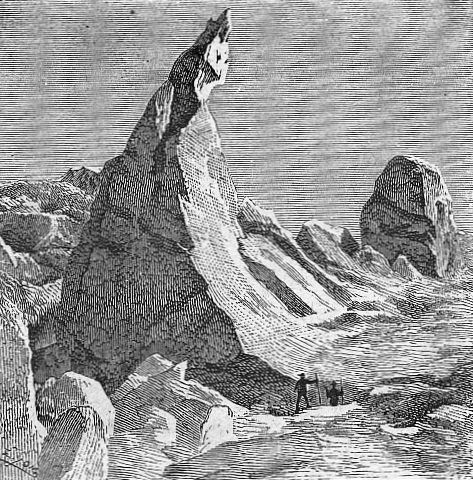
An illustration from Jules Verne's short story 'Quarantième ascension française au mont Blanc' (1871) drawn by Edmond Yon. Polski: Ilustracja opowiadania Juliusza Verne'a 'Quarantième ascension française au mont Blanc' (Czterdzieste francuskie wejście na Mont Blank , 1871) autorstwa Edmonda Yona. Français : Jules Verne: 'Quarantième ascension française au mont Blanc' (1871), dessins par Edmond Yon.